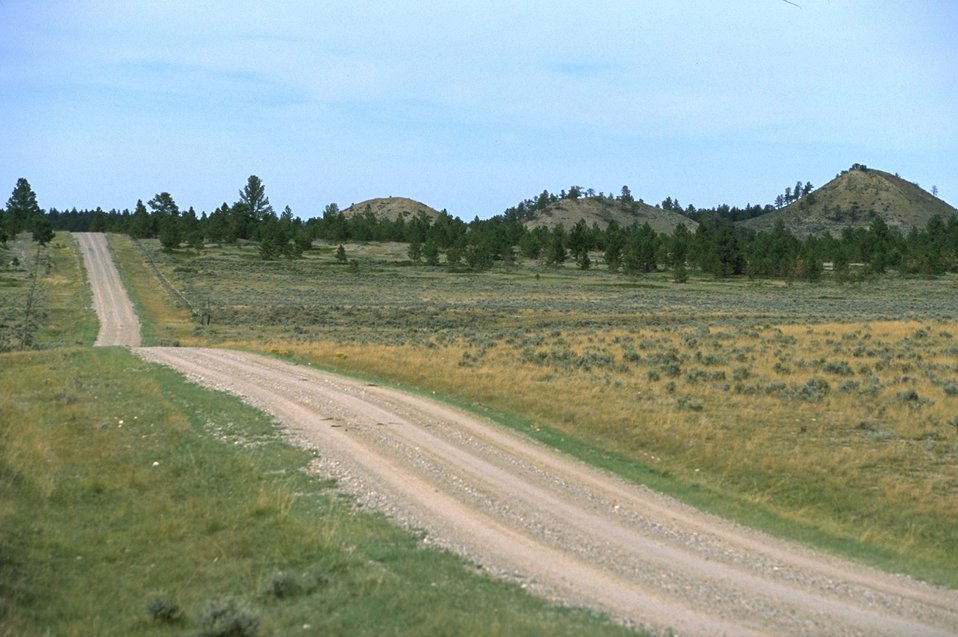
Acid Shale Area of Critical Environmental Concern (ACEC)